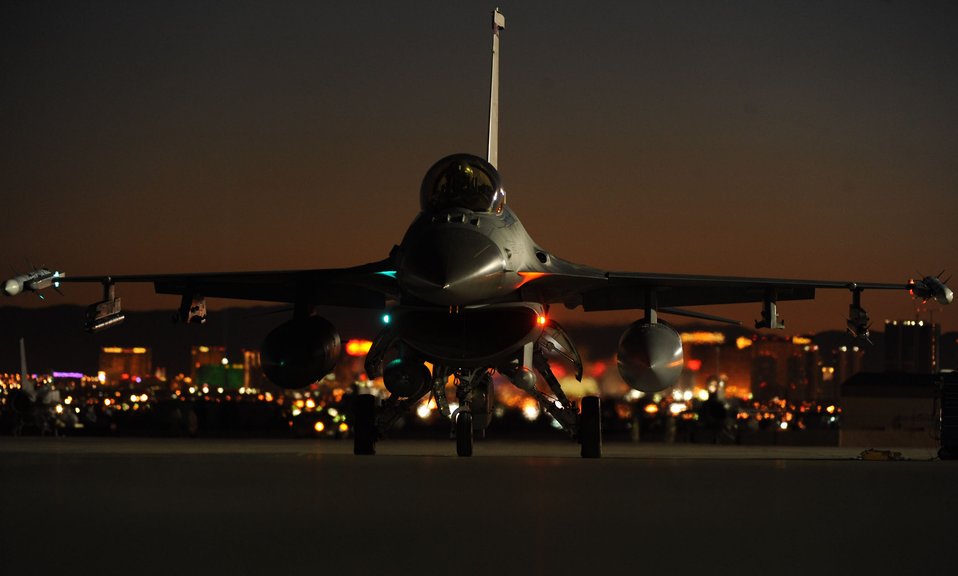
Runway lights

An Airman from the 480th Fighter Squadron at Spangdahlem Air Base Germany, taxis to the runway in an F-16 Fighting Falcon for a night training mission Feb. 2, 2011, during exercise Red Flag 11-2 at Nellis Air Force Base, Nev.